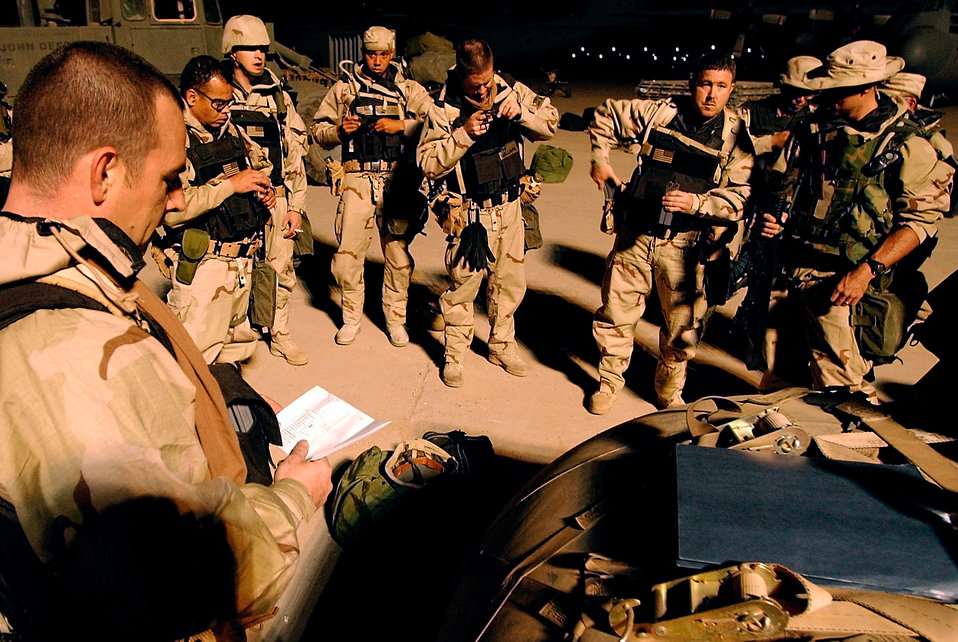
Roll call

OPERATION IRAQI FREEDOM -- Airmen of the 821st Tanker Airlift Control Element wait to board a C-130 Hercules aircraft March 27. The aircraft will move the airmen to another undisclosed location supporting Operation Iraqi Freedom.